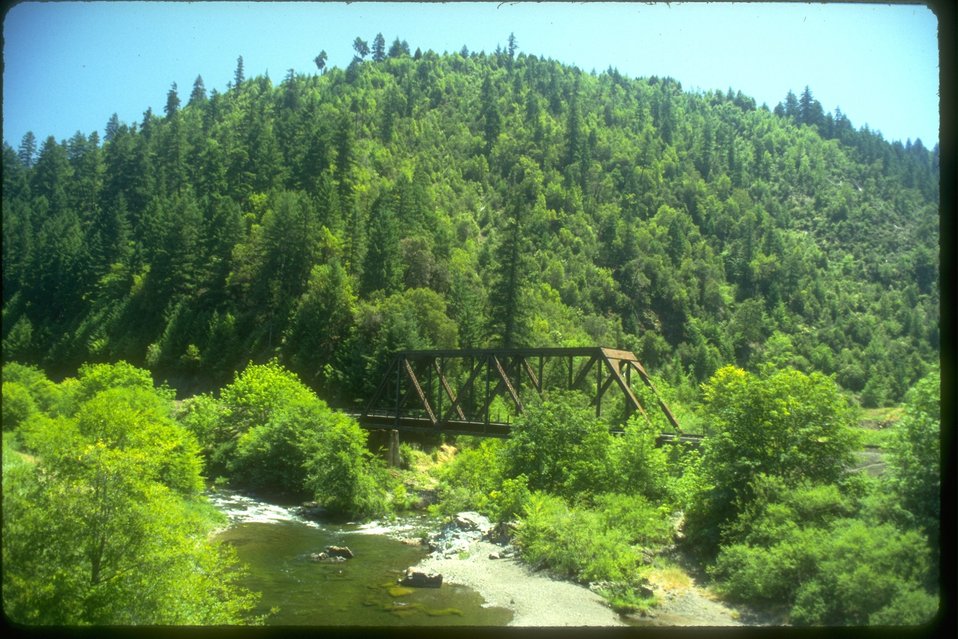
Oregon and California (O&C) Steel Girder Bridge built in 1905.